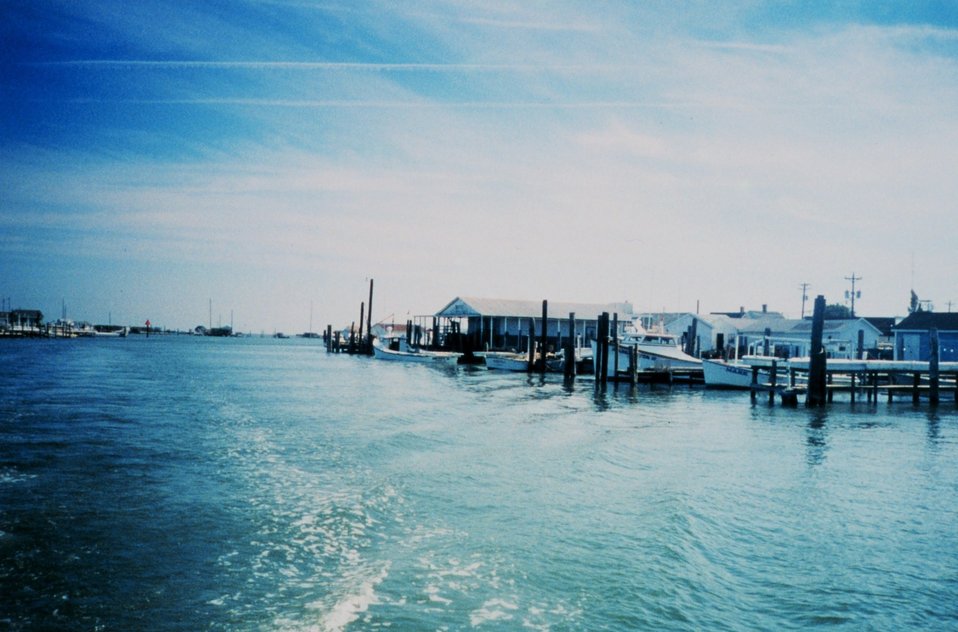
The harbor at Tangier Island, a classic Chesapeake Bay town.